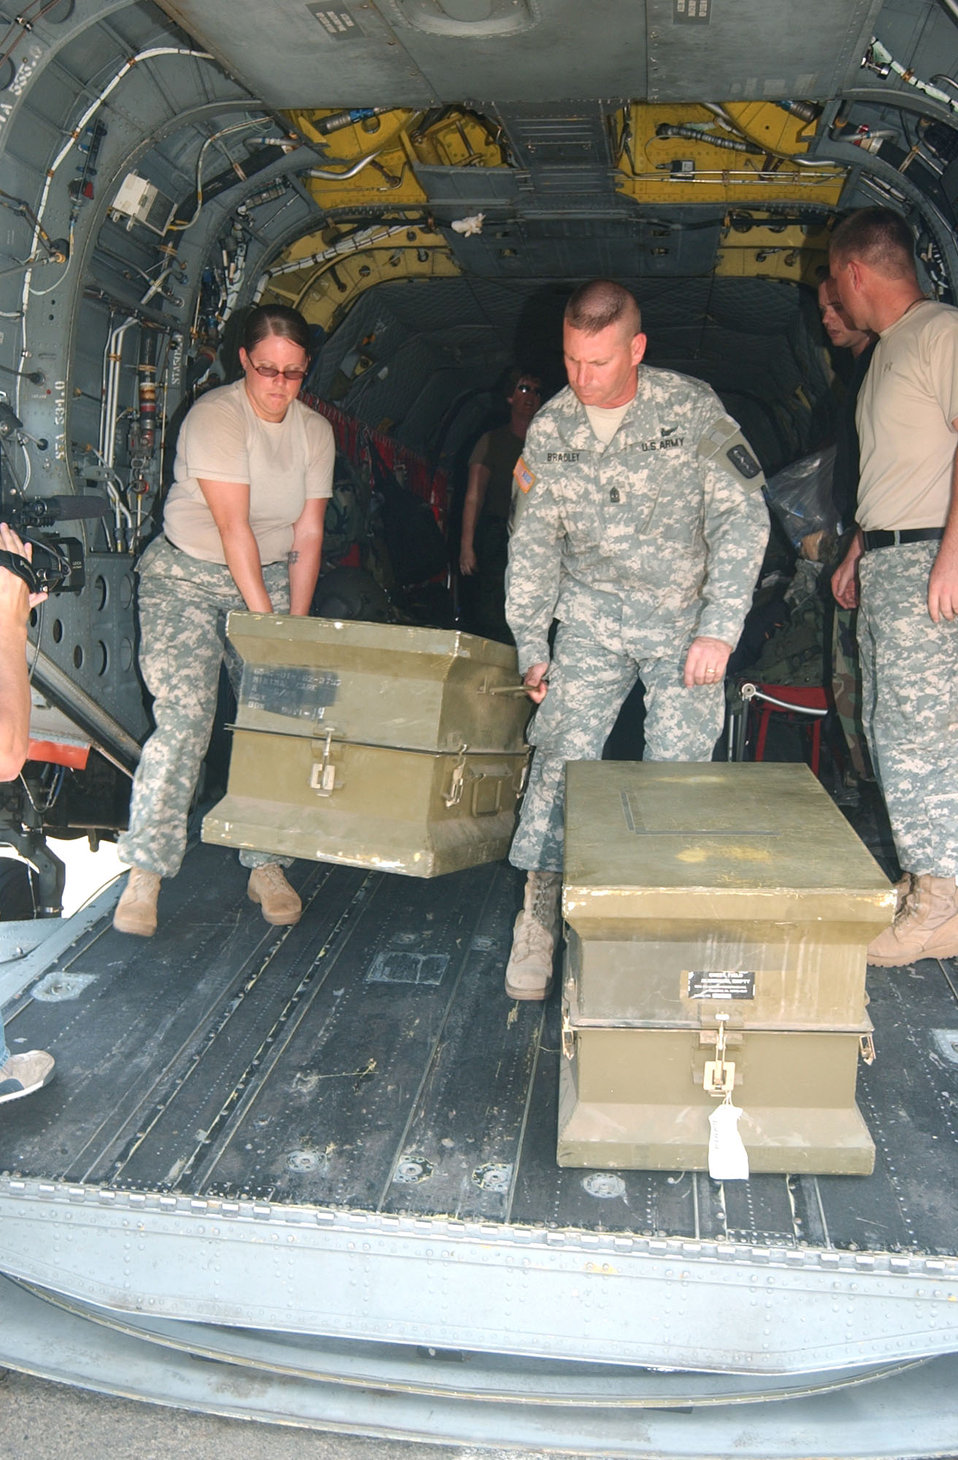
U.S. military gives medical equipment to Nicaragua

Army Sgt. Bonnie Blevins and Army Master Sgt. John Bradley unload a trunk filled with medical equipment, which was donated to a hospital in Leon, Nicaragua, Sept. 13. Joint Task Force-Bravo members at Soto Cano Air Base, Honduras, donated more than $185,000 worth of medical equipment and supplies to a hospital where people were being treated after an alcohol poisoning epidemic claimed the lives of more than 45 people and left hundreds more ill.